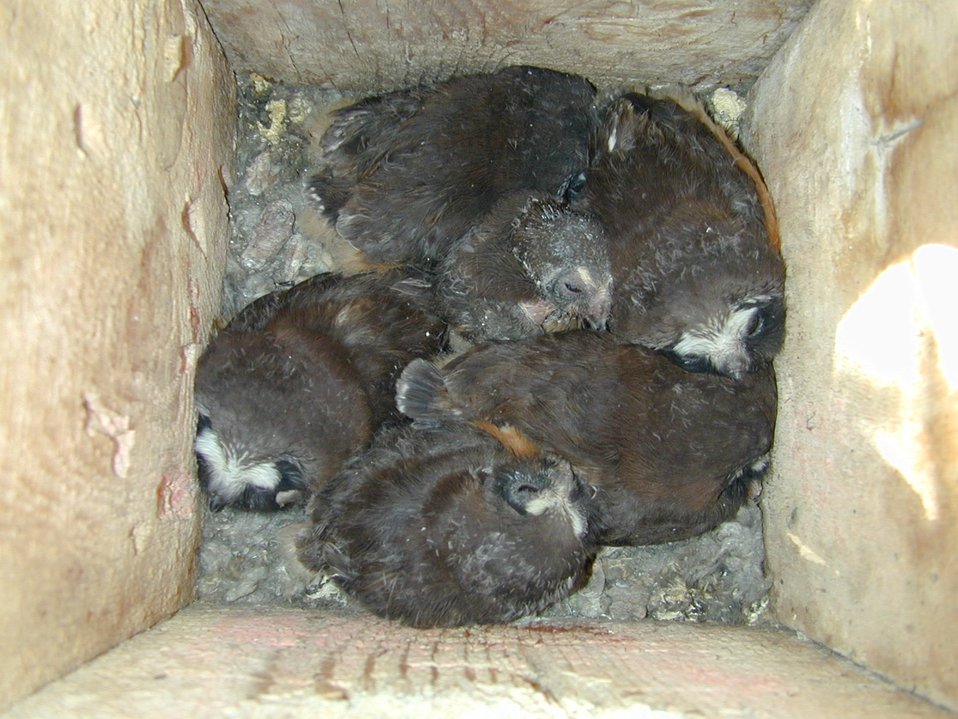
Environmental Education Fire Workshop Timberline High School Fall 2000